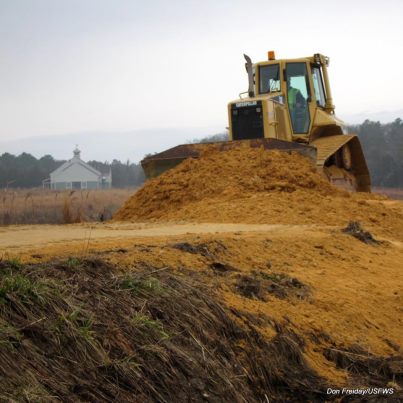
Photo of the Week - Repairs have begun at Edwin B. Forsythe National Wildlife Drive (NJ)

Photo of the Week - 1/28/13

The first loads of fill are arriving and the repair of Forsythe’s Wildlife Drive has begun! It’s been estimated that approximately 2,000 dump truck loads of fill will be required to repair the damage from Hurricane Sandy.